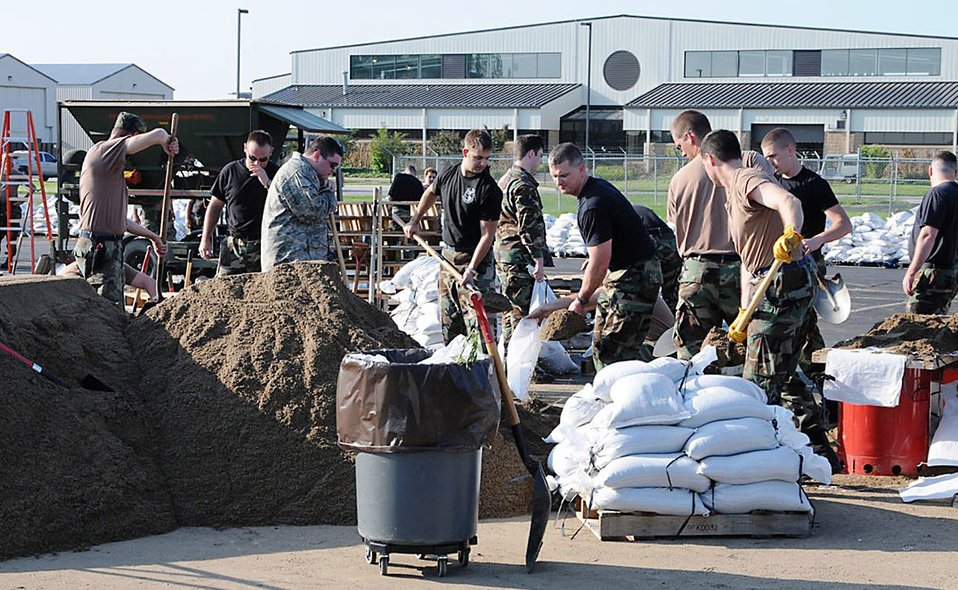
Indiana's Air, Army Guard respond to regional flooding

Indiana Air National Guard members continuously fill sandbags in relief following the flood waters that hit Vigo County June 7. The guardsmen are assigned to the 181st Intelligence Wing from Terre Haute, Ind.